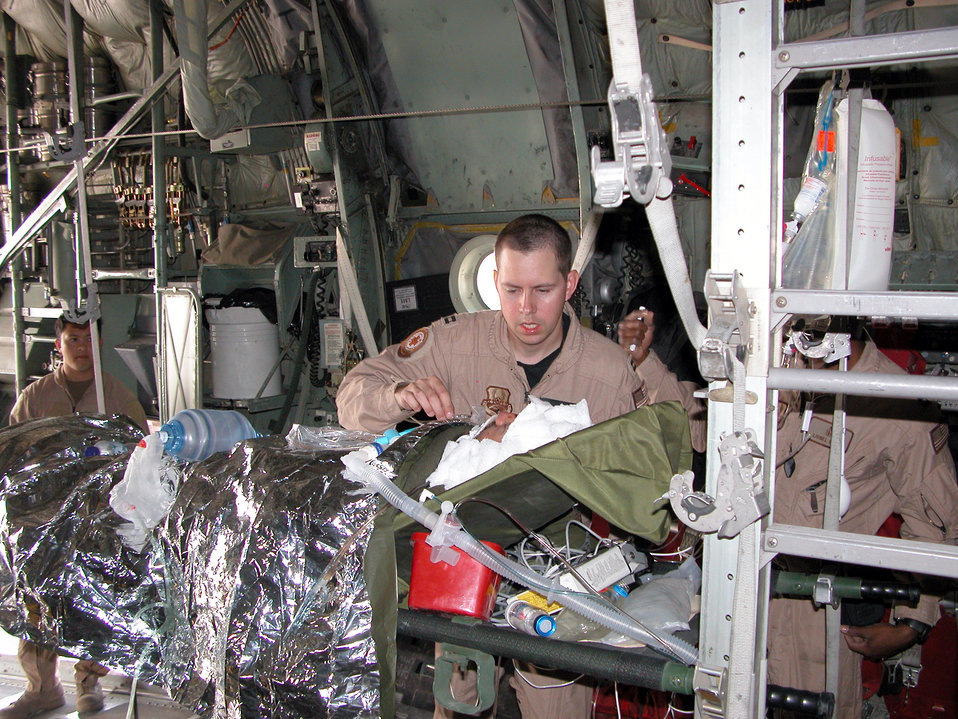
Medical care at 15,000 feet

SOUTHWEST ASIA -- Capt. (Dr.) Erik von Rosenvinge conducts an initial assessment of his patient before a C-130 Hercules cargo aircraft leaves for Baghdad on Jan. 28. The doctor is a 379th Aeromedical Squadron critical care air transport physician.